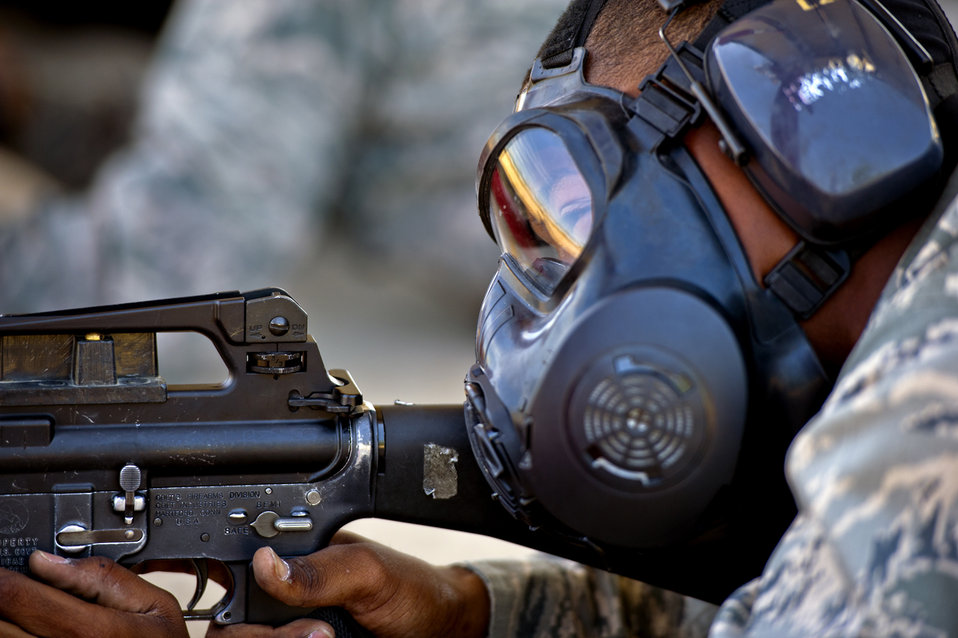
Breathe easy

Air Force Basic Military Training trainee Dionte Maxwell, with the 326th Training Squadron's Flight 547, fires at his target while wearing his gas mask during a combat arms training and maintenance course July 26, 2011, at Medina Annex in San Antonio, Texas. The 8.5 weeks of basic training are designed to prepare the trainee mentally, emotionally and physically to become a warrior Airman.